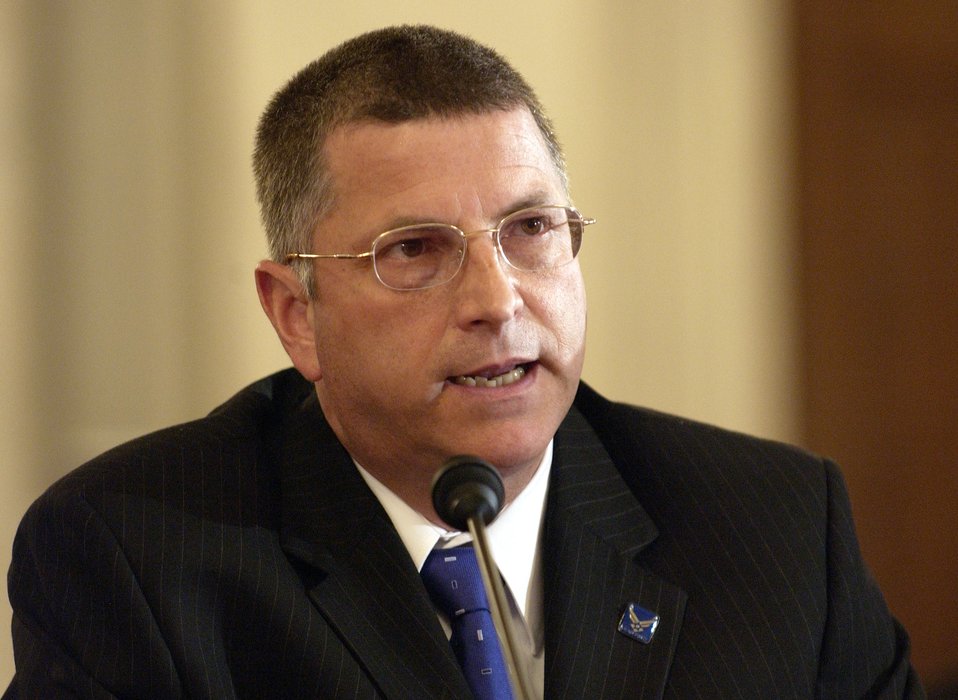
Air Force leaders testify on IG tanker lease report

WASHINGTON -- Michael L. Dominguez, acting secretary of the Air Force, gives an opening statement during a hearing of the Senate Armed Services Committee here June 7. The committee held the hearing to examine the Department of Defense inspector general's management accountability review of the Boeing KC-767A Tanker Program.